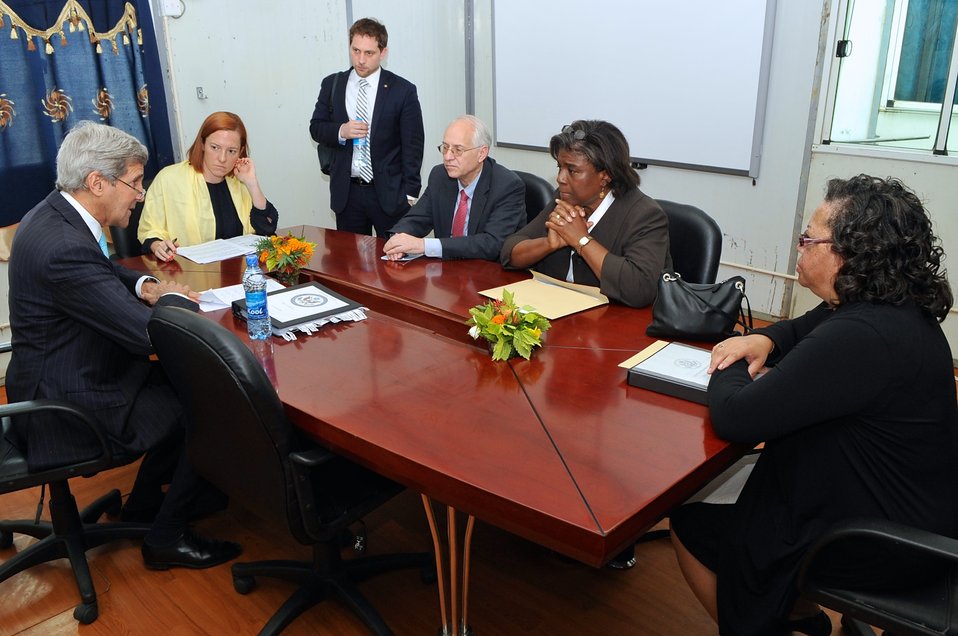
Secretary Kerry Meets With Senior Advisers Before News Conference in Juba

U.S. Secretary of State John Kerry meets with Spokesperson Jen Psaki, Deputy Chief of Staff Jon Finer, Special Envoy to Sudan and South Sudan Donald Booth, U.S. Assistant Secretary of State for African Affairs Linda Thomas-Greenfield, and U.S. Ambassador to South Sudan Susan Page before speaking to reporters during a news conference that followed his meeting with South Sudanese President Salva Kiir Mayardit in Juba on May 2, 2014.